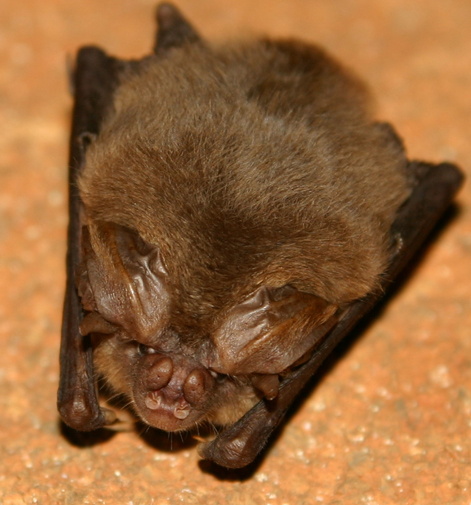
Ozark Big-eared Bat

This Ozark big-eared bat is hibernating with its ears folded back along its body, as is typical during hibernation